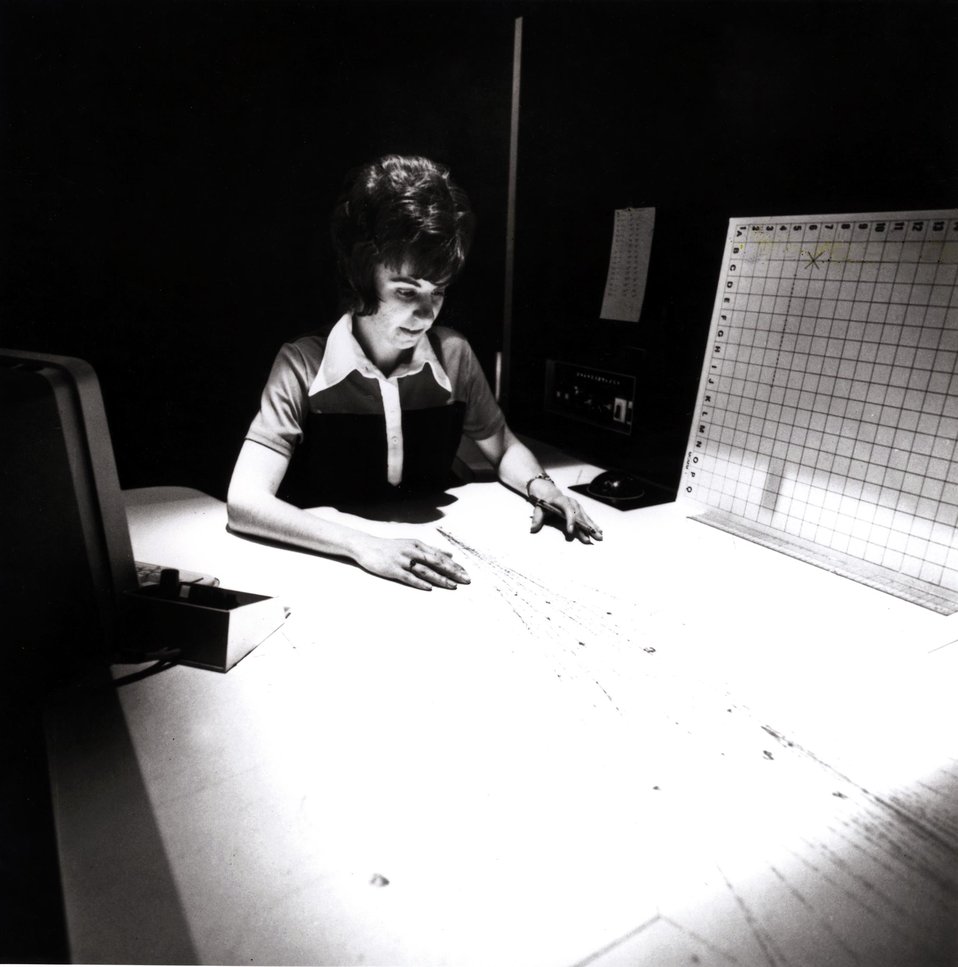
Karen Schmidt measures a high-multiplicity event for Experiment #37A on a MOMM (Manual Operating Measuring Machine) table.